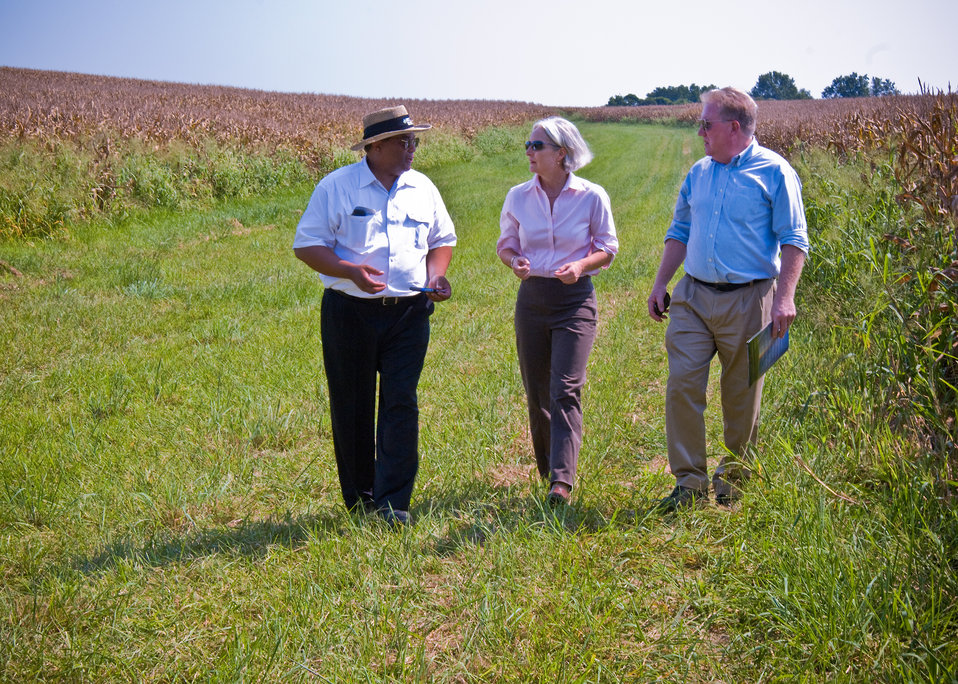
Jon Hall (left), United States Department of Agriculture, Natural Resources Conservation Service (NRCS), State Conservationist, Ann Mills (center), Deputy Undersecretary, Natural Resources and Environment and Lawrence Ellsworth (right), Chief Agricultural Counselor to the Administrator, Environmental Protection Agency (EPA) walk along a grassed waterway during farm tour for federal, state, local agencies and conservation partners to learn about innovative conservation solutions and technologies funded for the Chesapeake Bay watershed. The tour was held on the Shellman Farm in Millington, Maryland along the Chester River a tributary of the Chesapeake Bay, Wednesday, September 1, 2010.